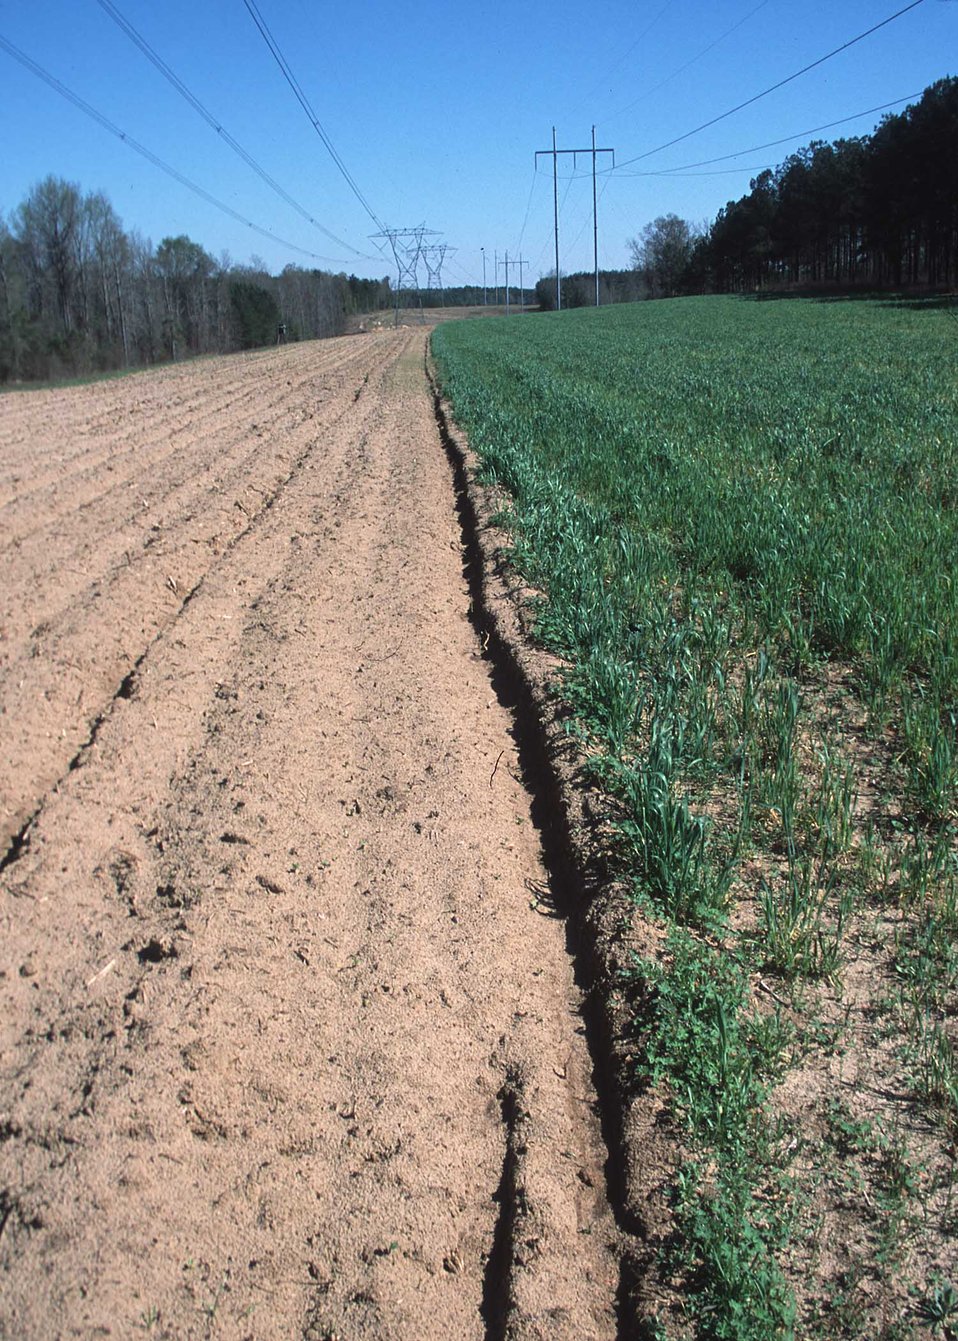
Project Wings foodplots of wheat under Georgia Power Company transmission lines. Project implemented with the assistance of NRCS, RC&D, and Georgia Power.